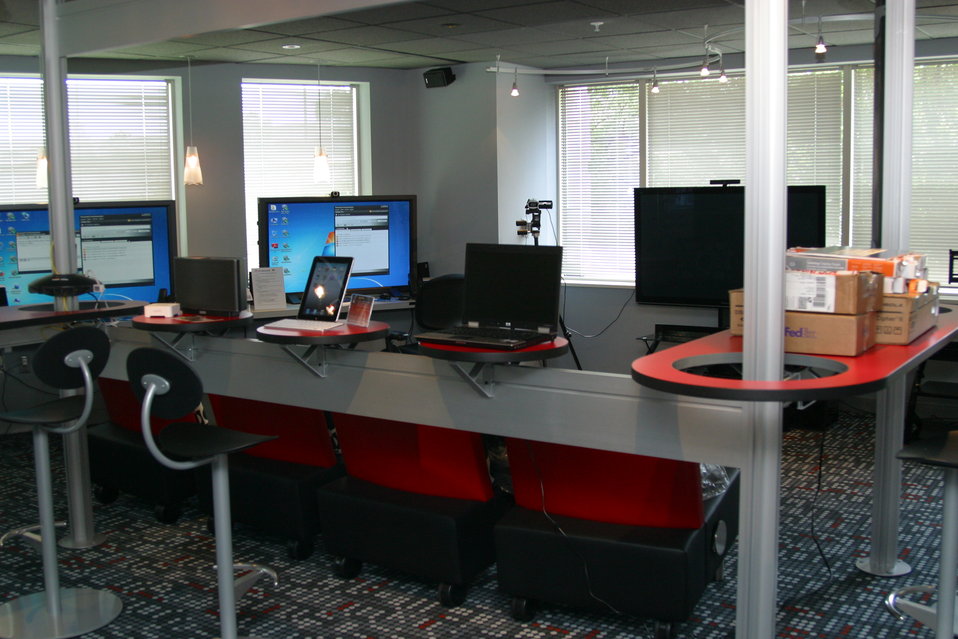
TEC Center

Debuting the FCC TEC Center on Wednesday July 13, 2011